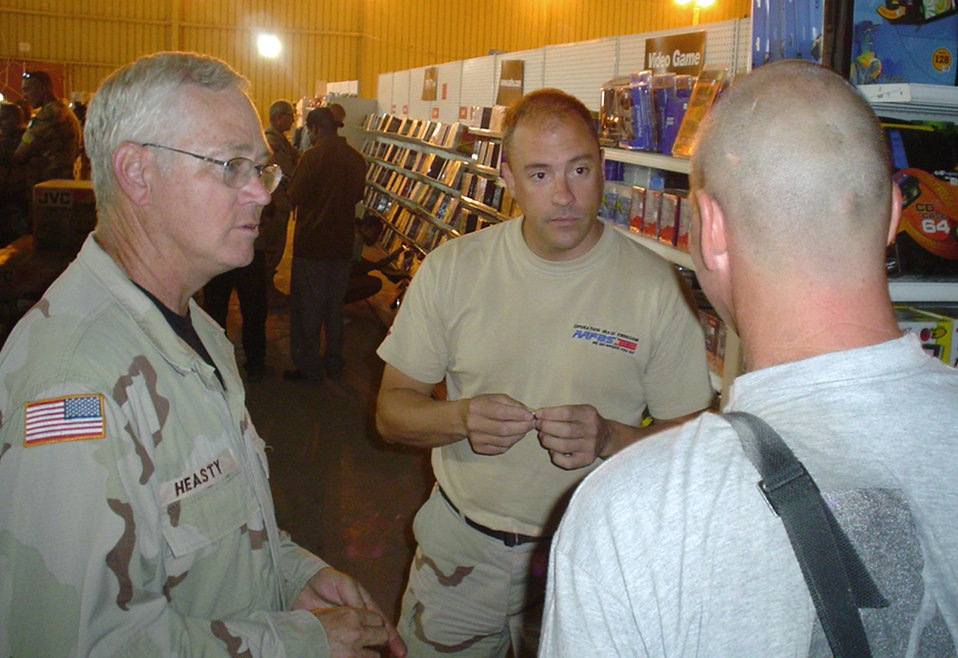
AAFES goes where troops are

TALLIL AIR BASE, Iraq -- Allen Heasty (left) and Timothy Adams talk to a customer in the newly air-conditioned Army and Air Force Exchange Service facility here. Mr. Heasty is the AAFES southern Iraq general manager, and Mr. Adams is the main exchange team leader.